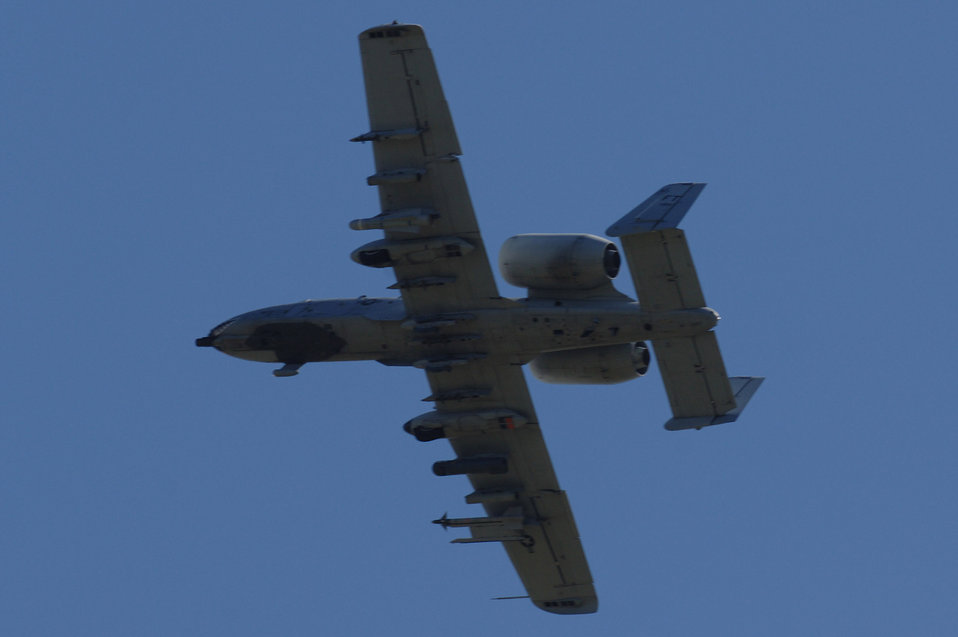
Crews sharpen skills at Atlantic Strike

An A-10 Thunderbolt II takes off from MacDill Air Force Base, Fla., for an Atlantic Strike exercise mission Oct. 24. The fighter, from the 23rd Fighter Group at Pope AFB, N.C., was at MacDill for the U.S. Central Command bi-annual Atlantic Strike training event. Through realistic close-air support training, Atlantic Strike is designed to better prepare aircrews and Air Force joint tactical air controllers for deployments.